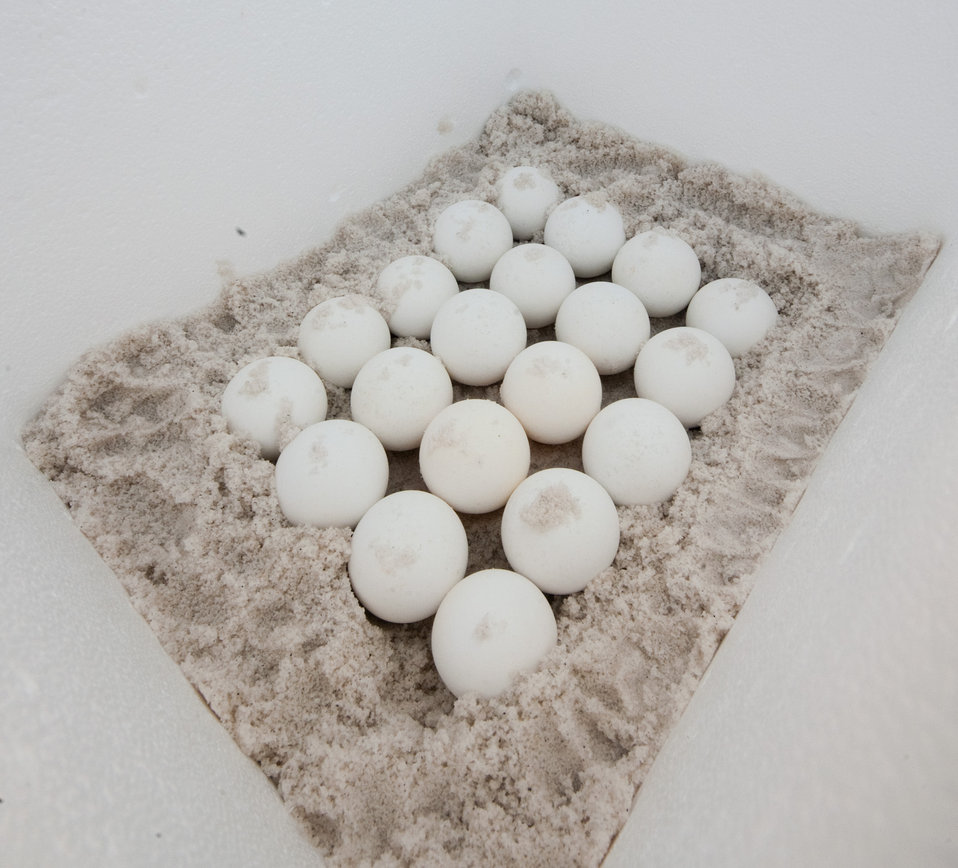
Turtle Eggs avoid Gulf Oil Danger

The first of several layers of Loggerhead sea turtle eggs in a Styrofoam cooler at Eglin Air Force Base, Florida, on August 9, 2010. The biologists at Eglin have followed strict U.S. Fish and Wildlife Department protocols to excavate more than 400 eggs. The 96th Civil Engineer Squadron is working with other governmental agencies, whose goal is the transportation of more than 700 sea turtle egg nests from the Gulf Coast to the Atlantic coast. When they get there, eggs are monitored at a climate-controlled facility, where they will be allowed to hatch in the cooler. Wildlife technicians will then release them into the ocean.